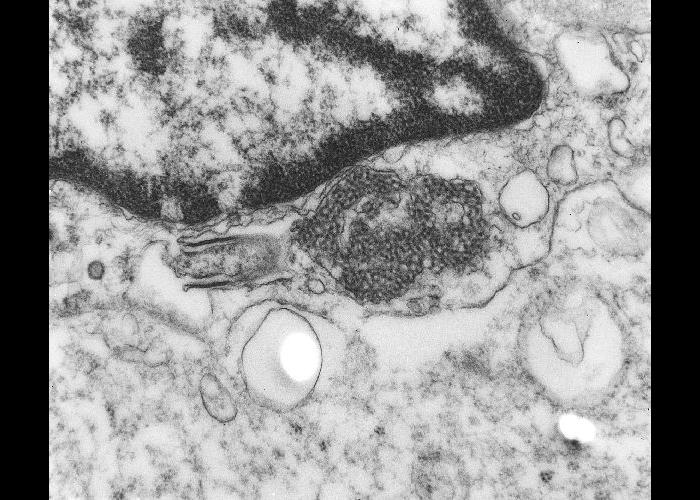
This transmission electron micrograph (TEM) depicts contiguous tubuloreticular structures and cylindrical confronting cisternae.